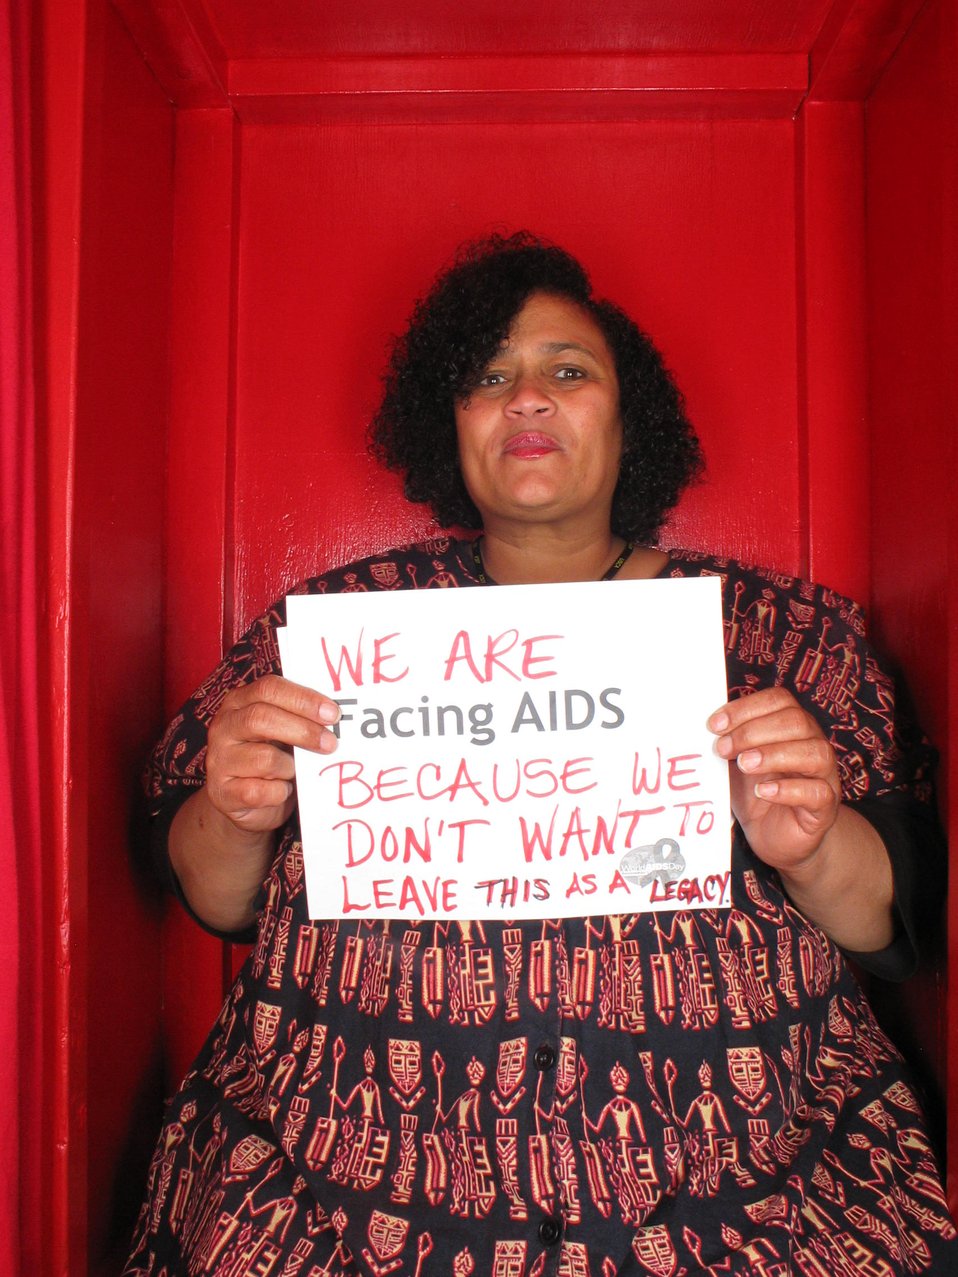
We are Facing AIDS because we don't want to leave this as a legacy.